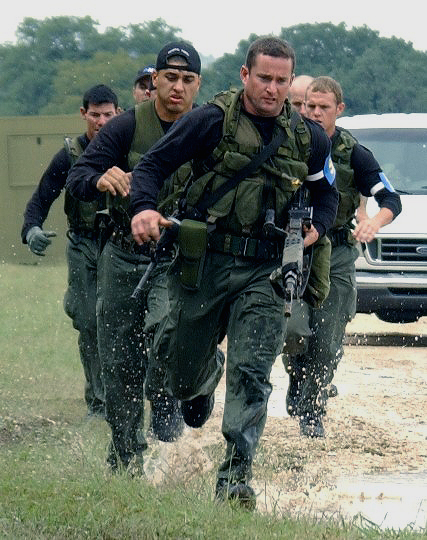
All-stars competing at Defender Challenge 2003

CAMP BULLIS, Texas -- Members of the Department of Energy team head for the first obstacle here during the warrior challenge event of Defender Challenge 2003. This year's competition is taking place Oct. 10 to 16. Defender Challenge pits all-star security forces teams from Air Force major commands, the British Royal Air Force Regiment and the Department of Energy against each other in events highlighting marksmanship, physical endurance, tactics, teamwork and leadership.